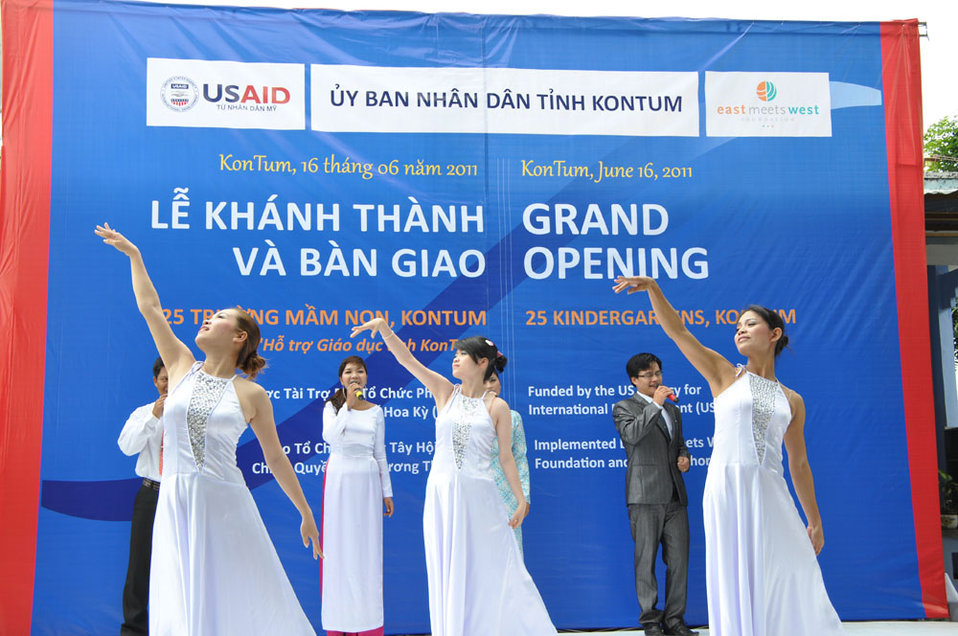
Singers and dancers perform at a kindergarten hand-over ceremony in Kon Tum.